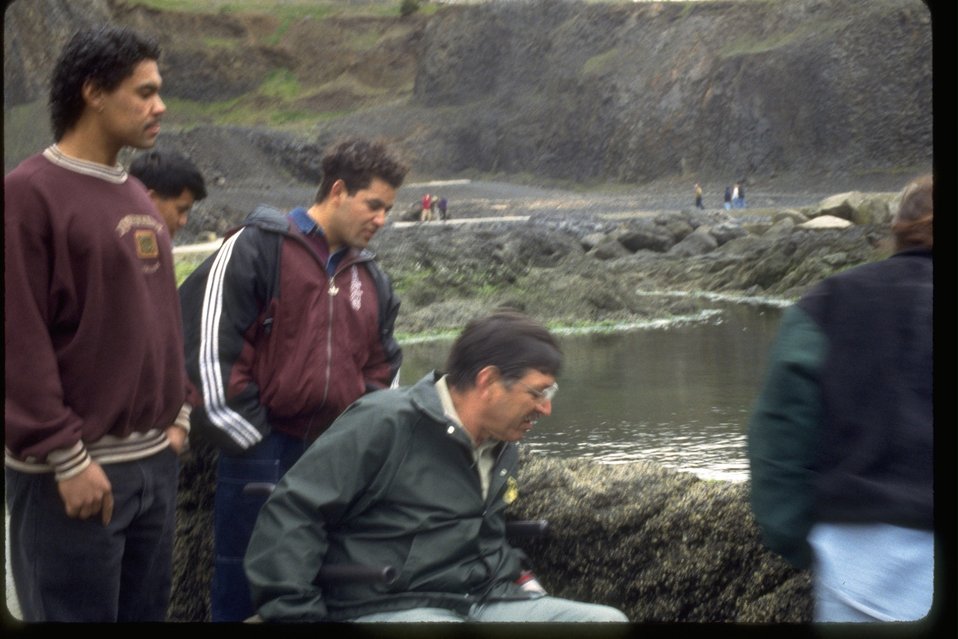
Wheelchair-use in Quarry Cove at Yaquina Head ONA.